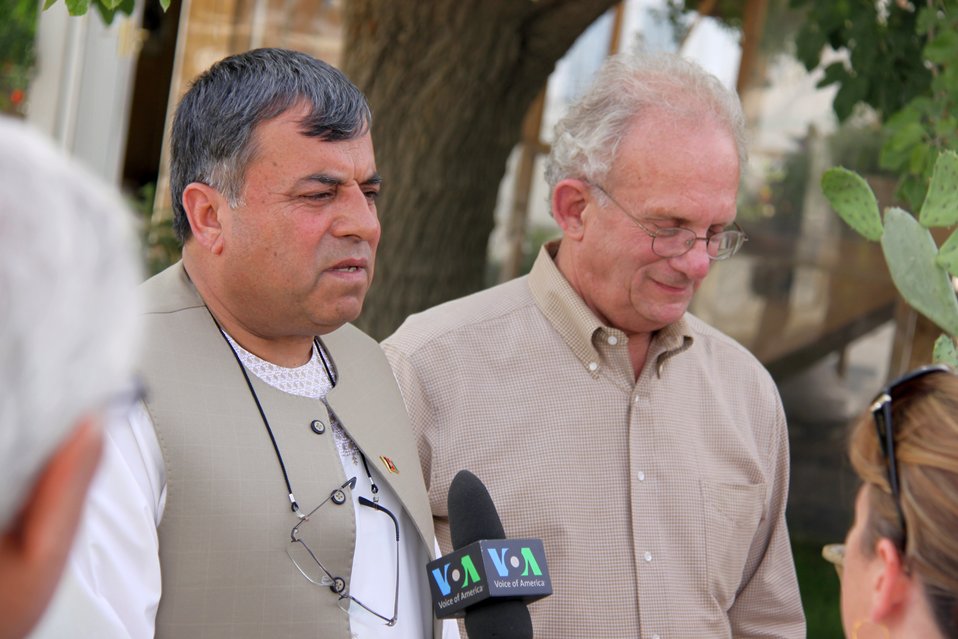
Meeting with Local Leaders in Kandahar